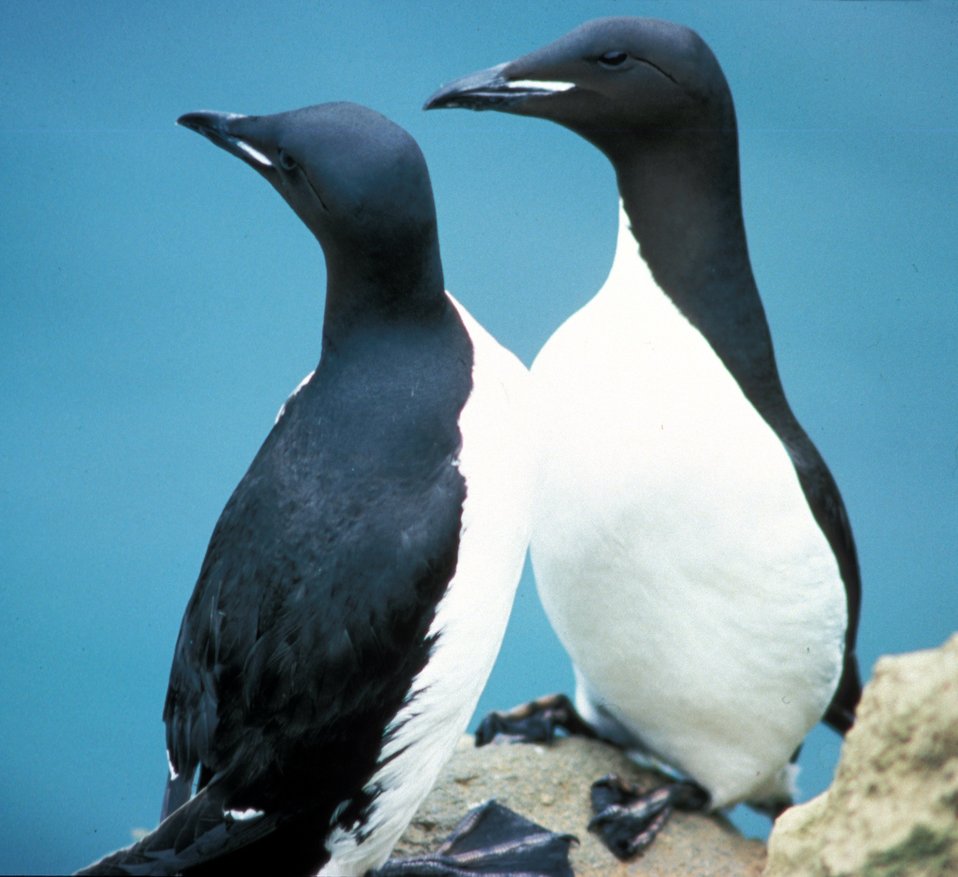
Thick-billed murres